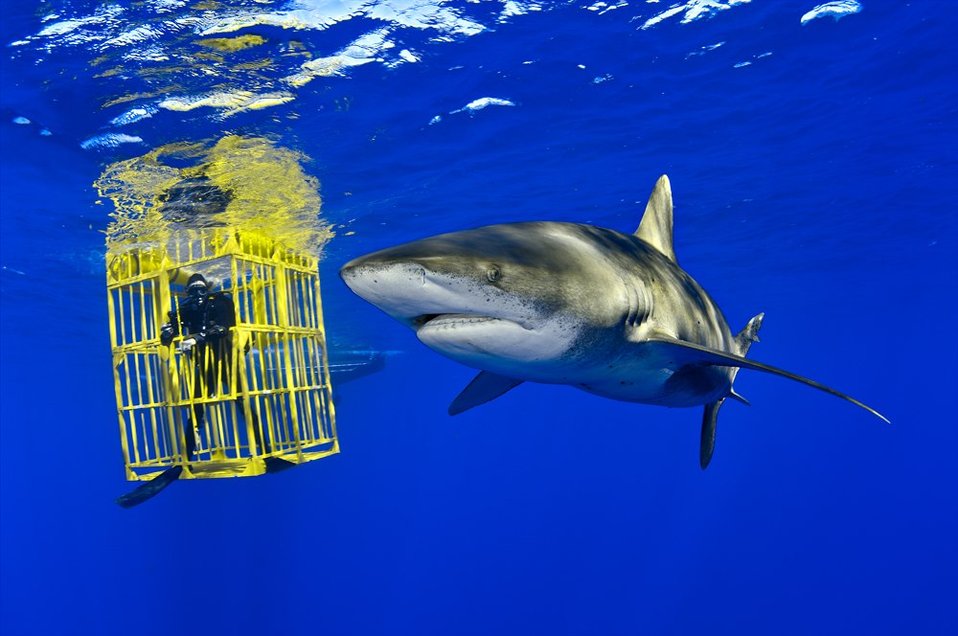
#20 - U.S. Supports Shark & Ray Proposals

Countdown to CoP16: Less than 19 days until CoP16! This week we'll be focusing on CITES and marine species. NOAA Fisheries Service provides guidance and scientific support for marine species that are listed, or proposed for listing, in CITES.

The U.S. is committed to global protection and sustainable use of marine species, such as sharks and rays. The Convention on International Trade in Endangered Species of Wild Fauna and Flora (CITES) is an international agreement that aims to ensure that international trade does not threaten the survival of plants and animals. It is a valuable tool to address the threats posed by global trade of marine species. The United States is supporting several shark and ray proposals at the upcoming CITES meeting in March, and support from other countries is critical to advance these proposals. Read more here: 1.usa.gov/14XWYyJ.

Oceanic Whitetip Shark. Taken by Brian Skerry.